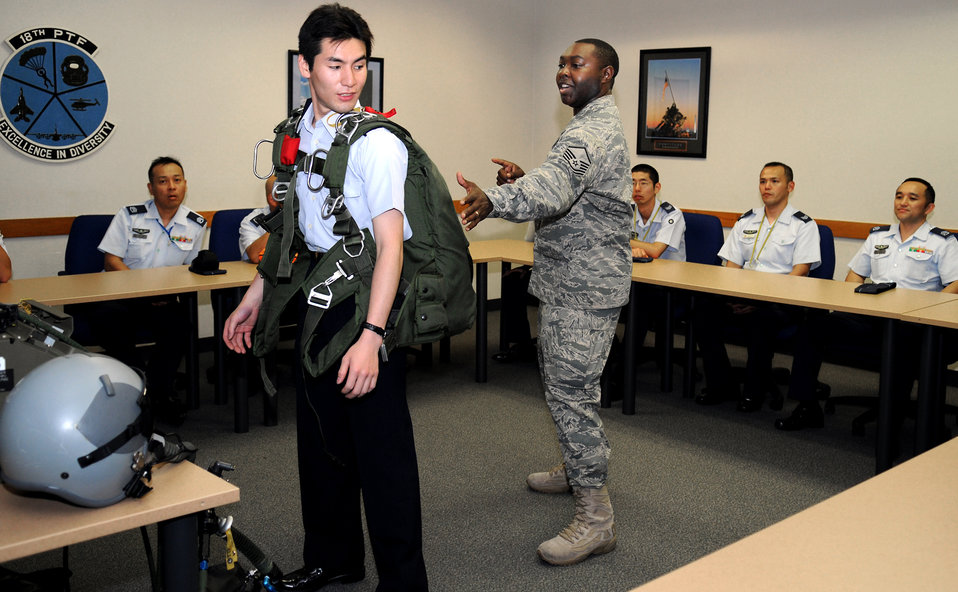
Kadena conducts bilateral cultural exchange

Master Sgt. Salem Channel gives a briefing on parachute rigging to visiting enlisted Japan Air Self Defense Force members as part of the bilateral exchange program at Kadena Air Base, Japan. Sergeant Channel is with the physiology operations element at the 18th Aerospace Medical Squadron.